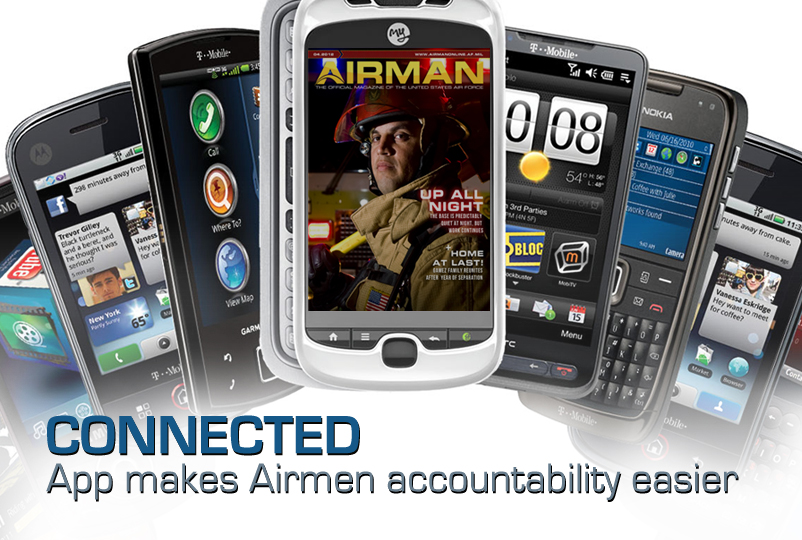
Connected